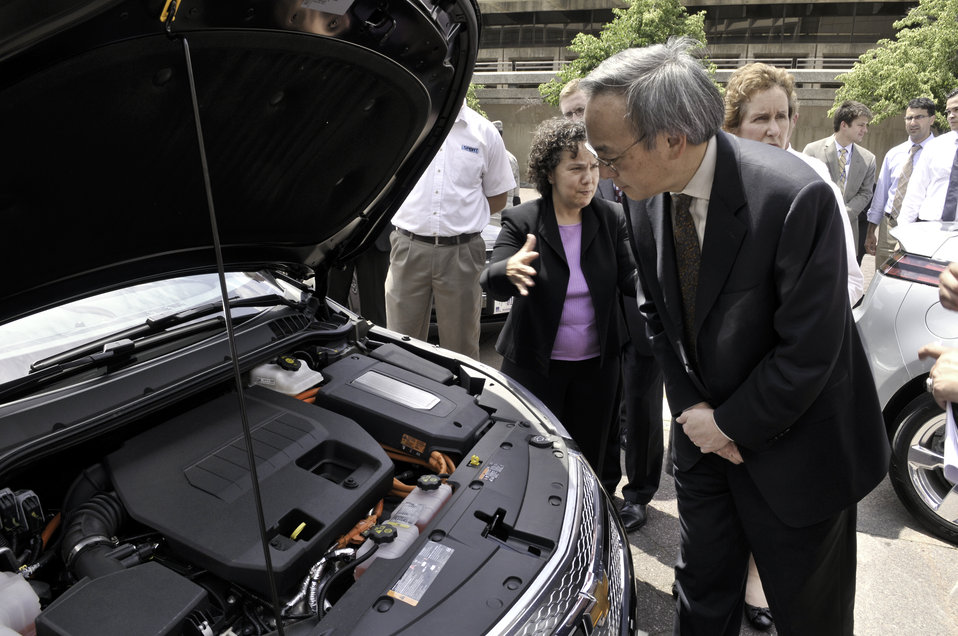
Clean Fleets Announcement 1 of 14

Sec. Steven Chu, Department of Energy, inspects a Chevy Volt newly purchased as part of the Department of Energy Fleet.